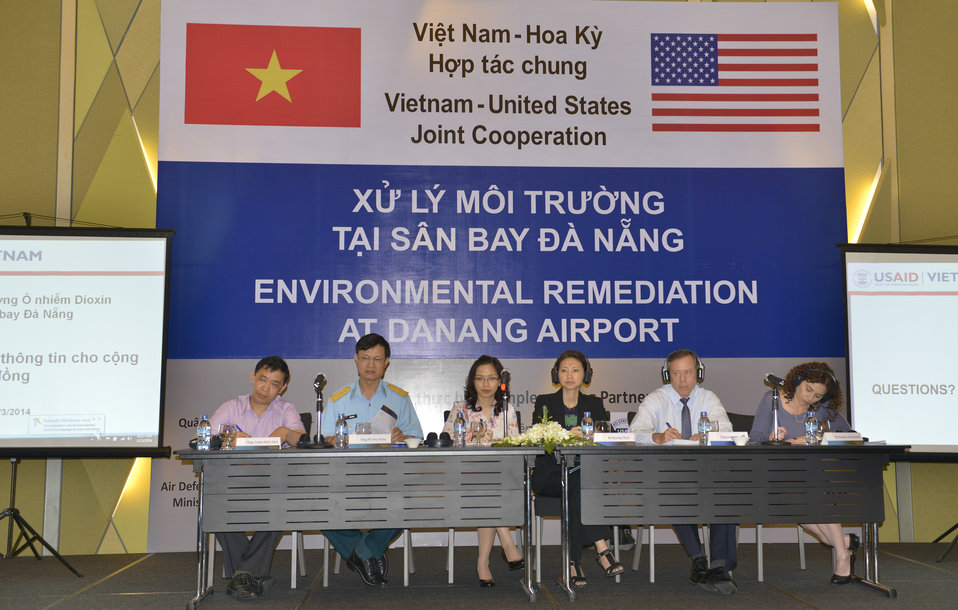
Community Outreach Session on Environmental Remediation of Dioxin Contamination at Danang Airport Project

Danang, March 25, 2014.